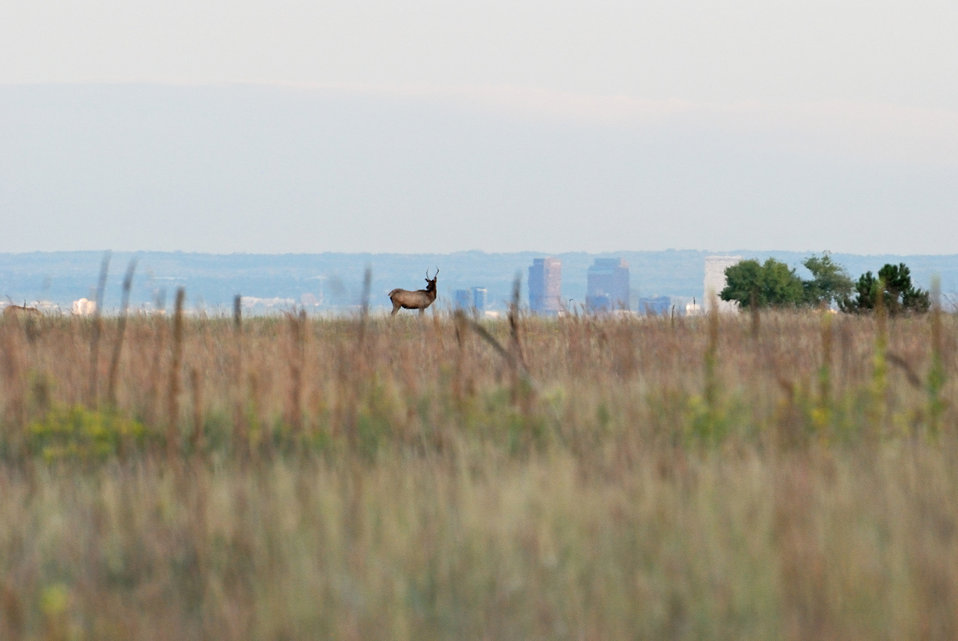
Rocky Flats refuge

The closed Rocky Flats site can now be used as a wildlife refuge.